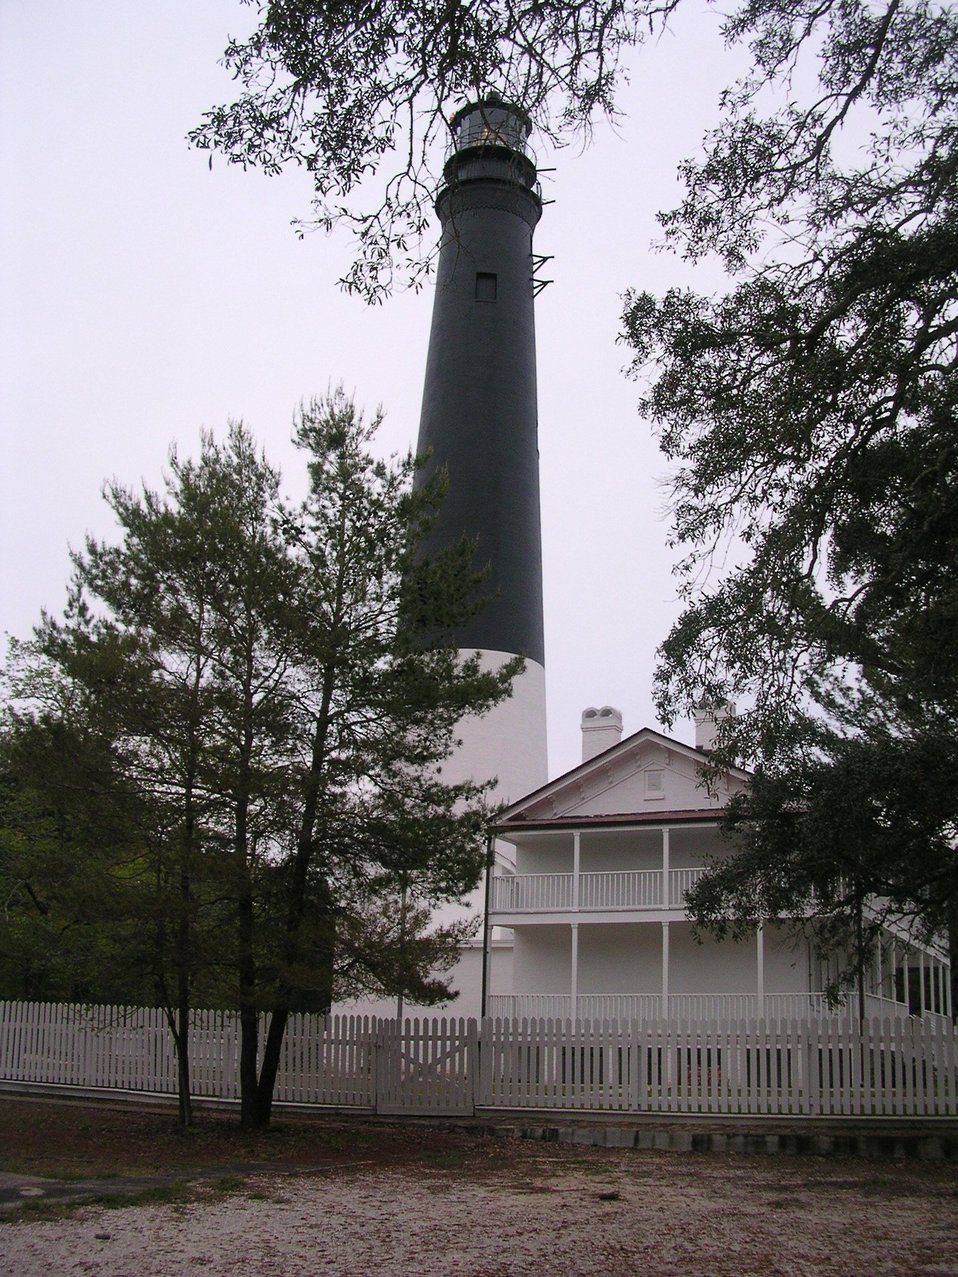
Pensacola Lighthouse